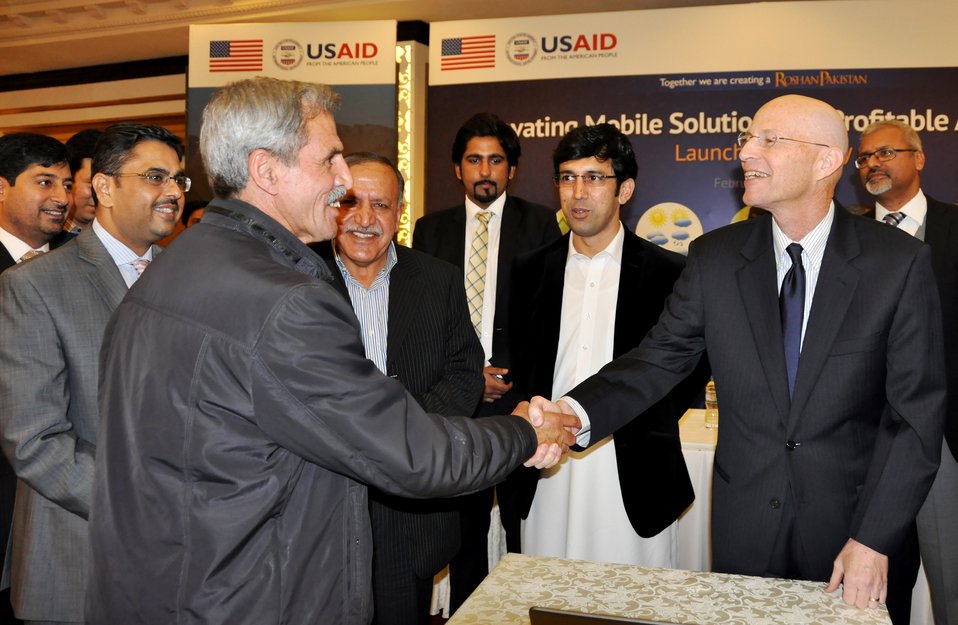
Launch Ceremony of the Mobile Agriculture Project

USAID Mission Director Gregory Gottlieb while greeting a farmer/ project beneficiary